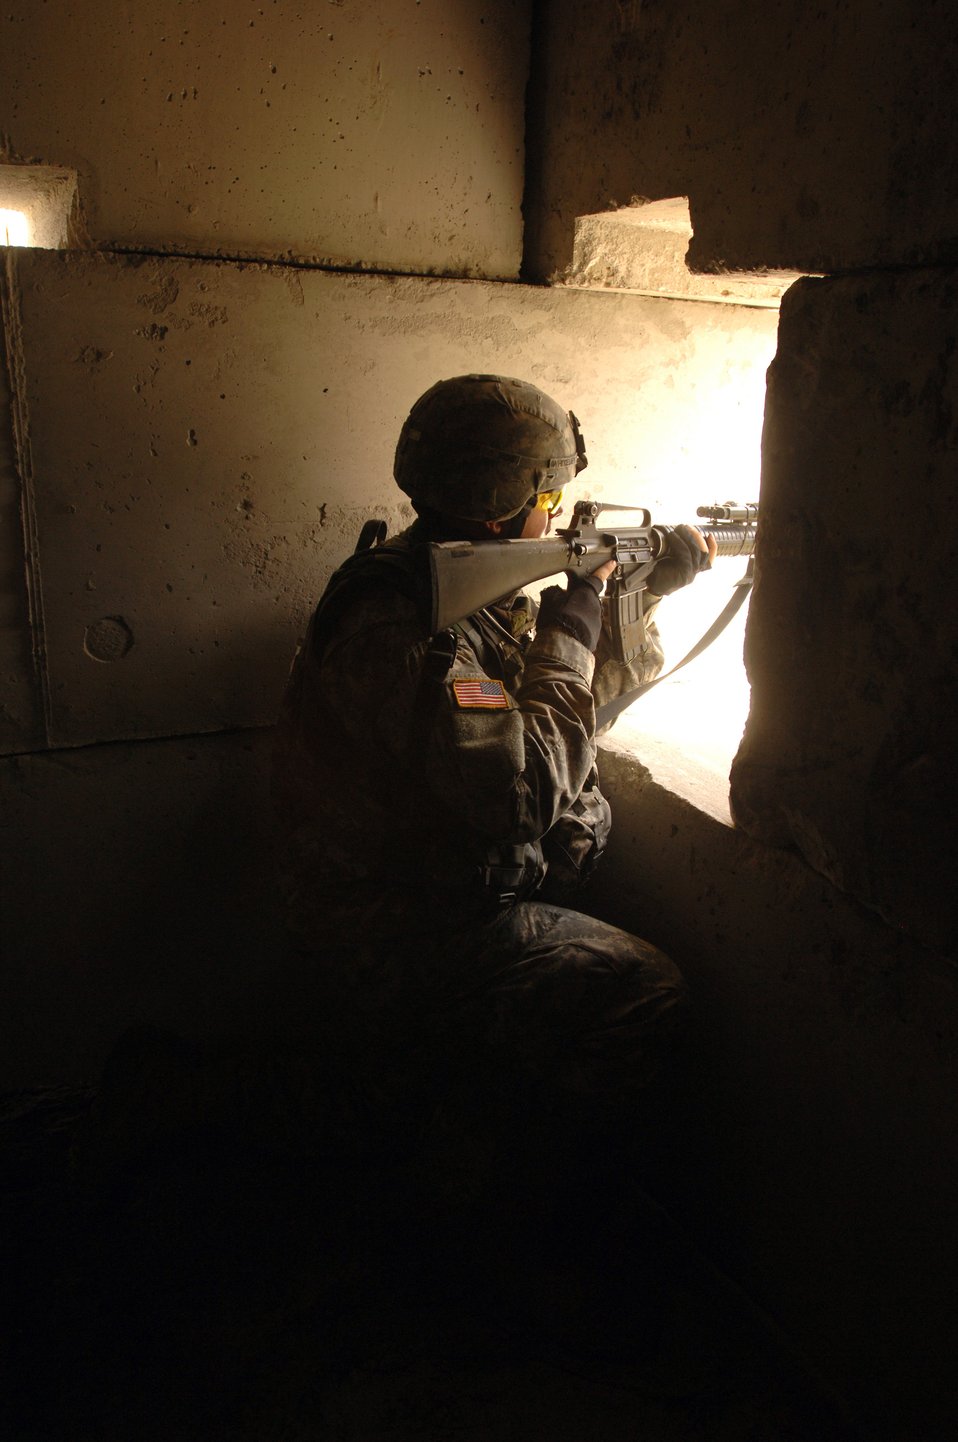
Atlantic Strike III

Pfc. Adam Hutchinson keeps eyes on aggressors from a secured building in the mock village on Wednesday, March 29, 2006, at Avon Park, Fla. More than 250 servicemembers participate in Atlantic Strike III, a joint deployment training.